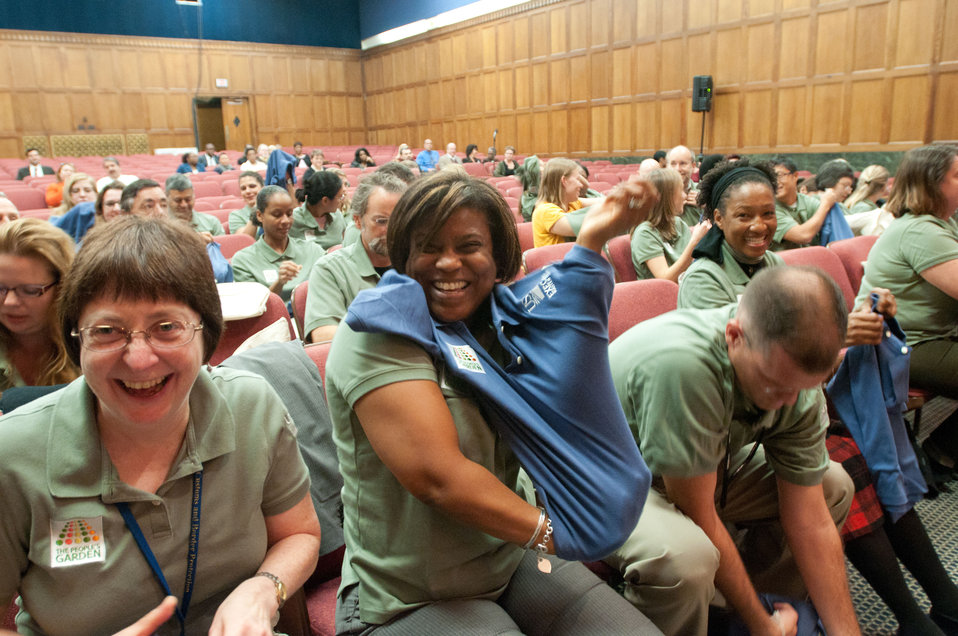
Graduation day of the 2011 U.S. Department of Agriculture (USDA) Executive Master Gardeners, on Tuesday, November 8, 2011 in Washington, DC. During the past six-weeks, students contributed 40-hours of volunteer time, completed studies and testing to receive their certificates today as an Executive Master Gardener. Many of the sessions occurred before work hours, during lunchtime or at community garden project sites such as Powell Middle School. USDA challenges its employees to establish People's Gardens at USDA facilities worldwide or in community gardens. People's Gardens vary in size and type, but all have a common purpose - to help the community and the environment. To learn about the People’s Garden Initiative visit www.usda.gov/wps/portal/usda/usdahome?contentid=peoples g....